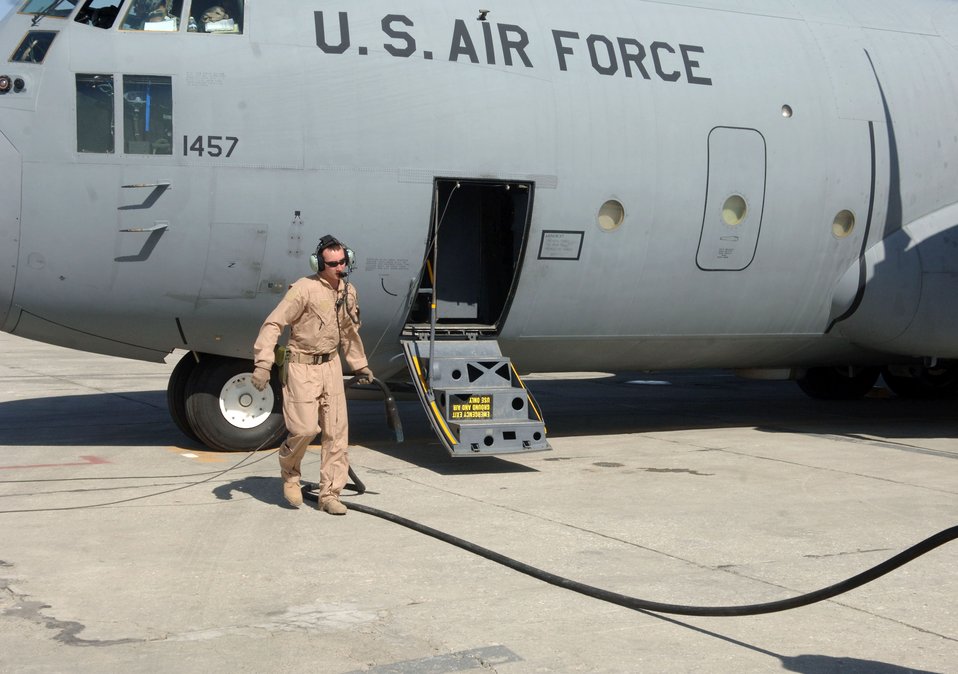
CENTAF airpower summary for 7 March, 2007

026: Senior Airman Davey Black, a loadmaster with the 774th Expeditionary Airlift Squadron, disconnects a power cart from a C-130 Hercules at Bagram Airfield, Afghanistan prior to departure March 7. The C-130 is just one of many aircraft providing intra-theater heavy airlift support daily to Operation Enduring Freedom, helping to sustain operations across Afghanistan.